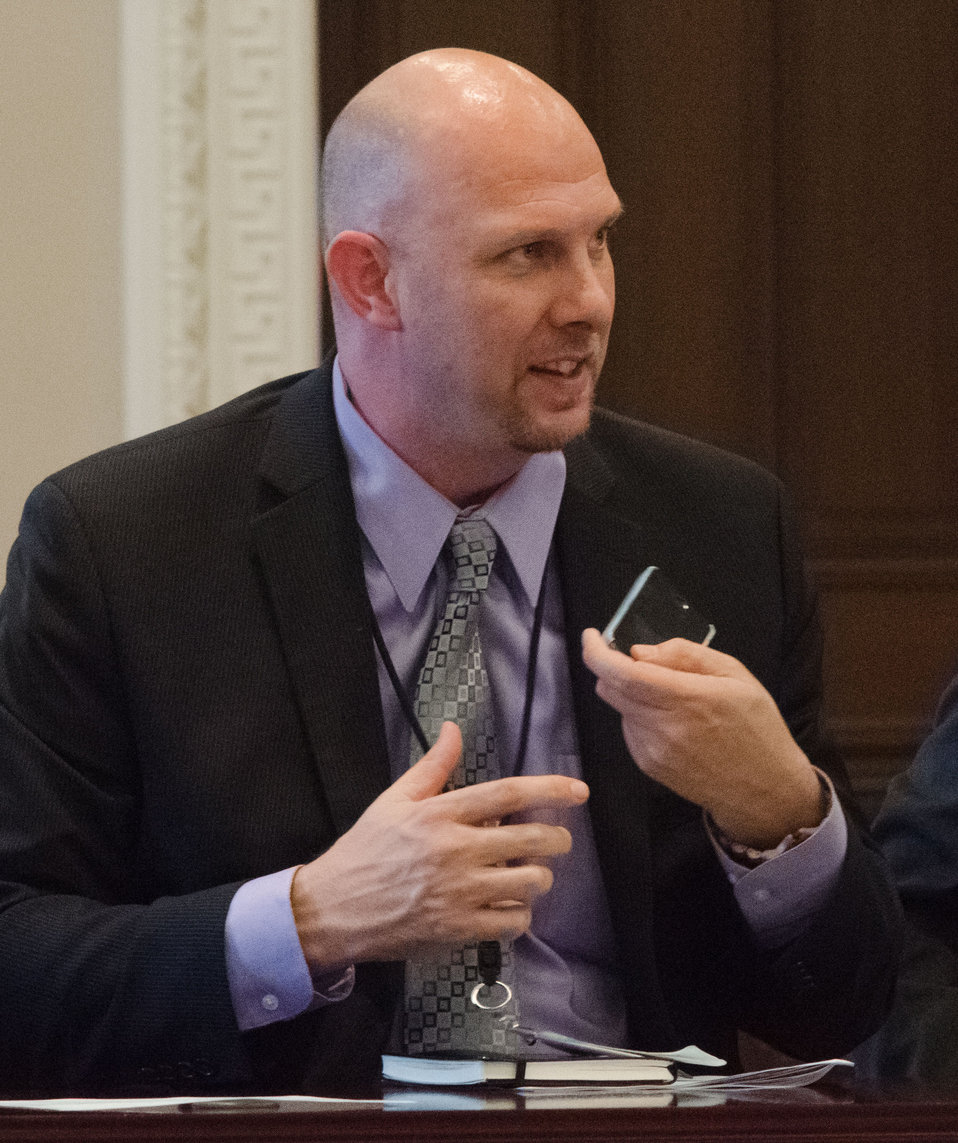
White House Office of Science and Technology Policy Assistant Director for Biotechnology Michael Stebbins, Ph.D., speaks about informative applications for smartphones during the White House Rural Council chaired by Agriculture Secretary Tom Vilsack at the White House in Washington, D.C. on Friday, Oct. 5, 2012. The White House Rural Council discusses recent White House announcements and Secretary Vilsack asked council members to outline their work plan for the coming months.